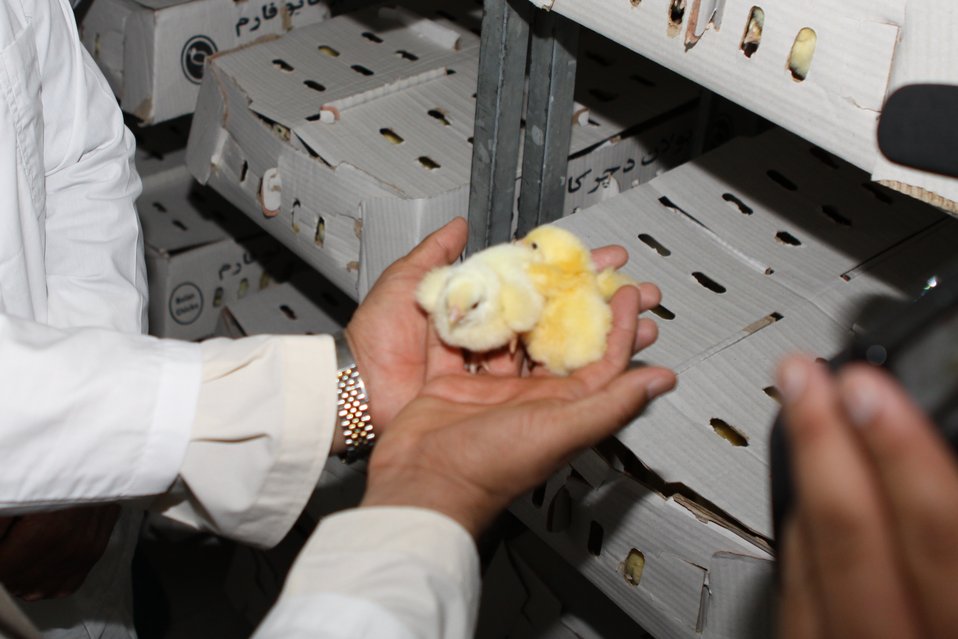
Bolan Poultry Farm